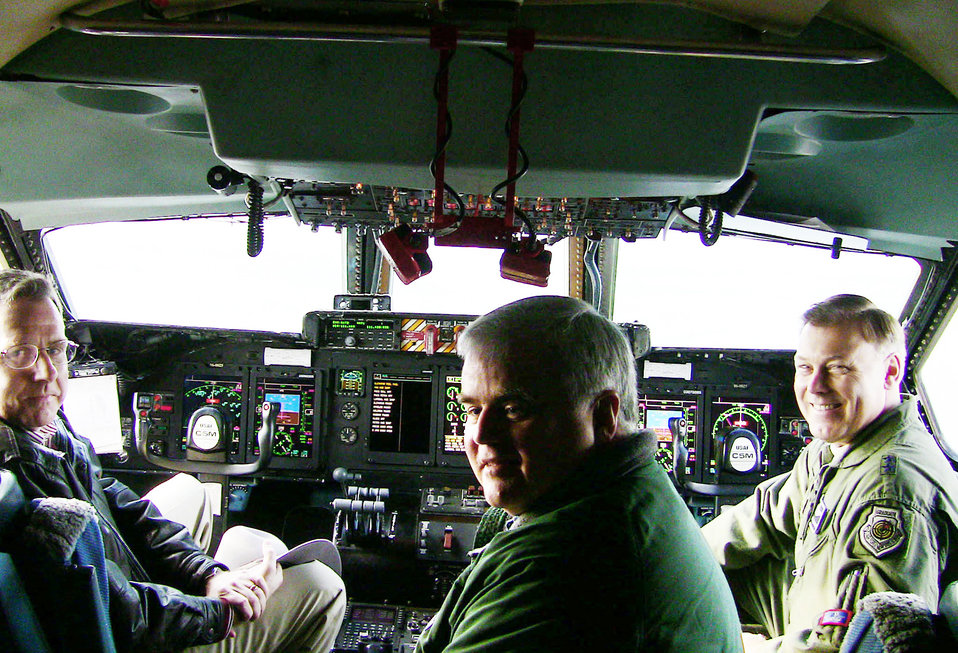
Defense official visits Dover C-5M testing

Dr. J. Michael Gilmore (left to right) Mike Crisp and Maj. Gen. Stephen T. Sargeant fly on a C-5M Super Galaxy sortie Dec. 7, 2009, at Dover Air Force Base, Del. The sortie was part of qualification operational test and evaluation being performed on the C-5M. Dr. Gilmore is the director of Operational Test and Evaluation, Mr. Crisp is the DOT&E deputy director of air warfare, and General Sargeant is the Air Force Operational Test and Evaluation Center commander.